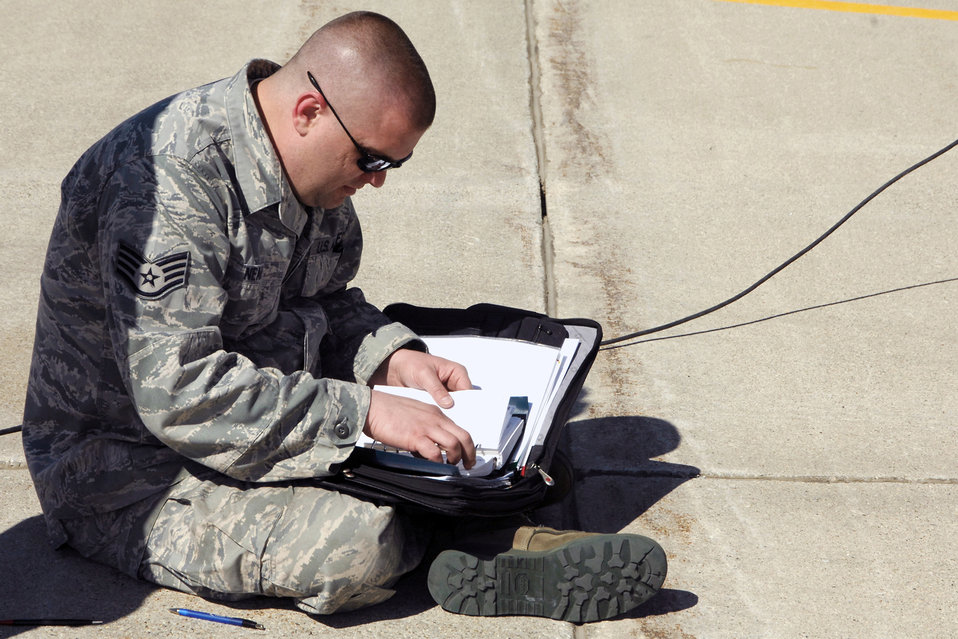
Airmen prepare KC-135

Staff Sgt. Timothy Near checks a technical manual prior to performing maintenance on a KC-135 Stratotanker April 14, 2011, at Selfridge Air National Guard Base, Mich. Sergeant Near is assigned to the Michigan Air National Guard's 191st Aircraft Maintenance Squadron.